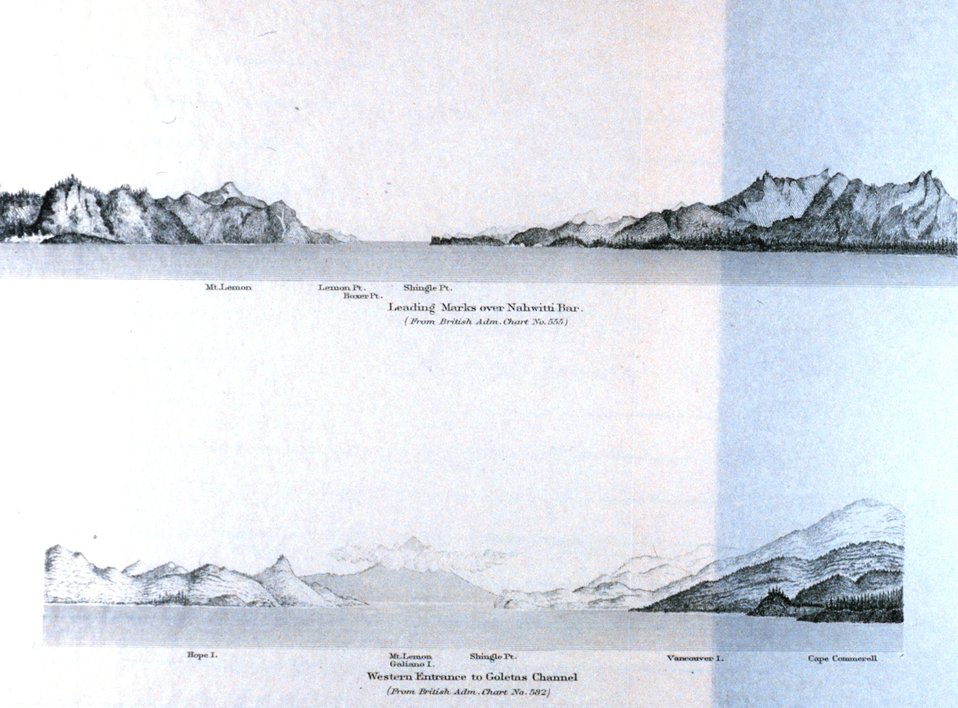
Leading marks over Nahwitti Bar. Western entrance to Goletas Channel. In: Pacific Coast Pilot Alaska Part I 1883. P. 16. Library call number VK943 .N3 1883.